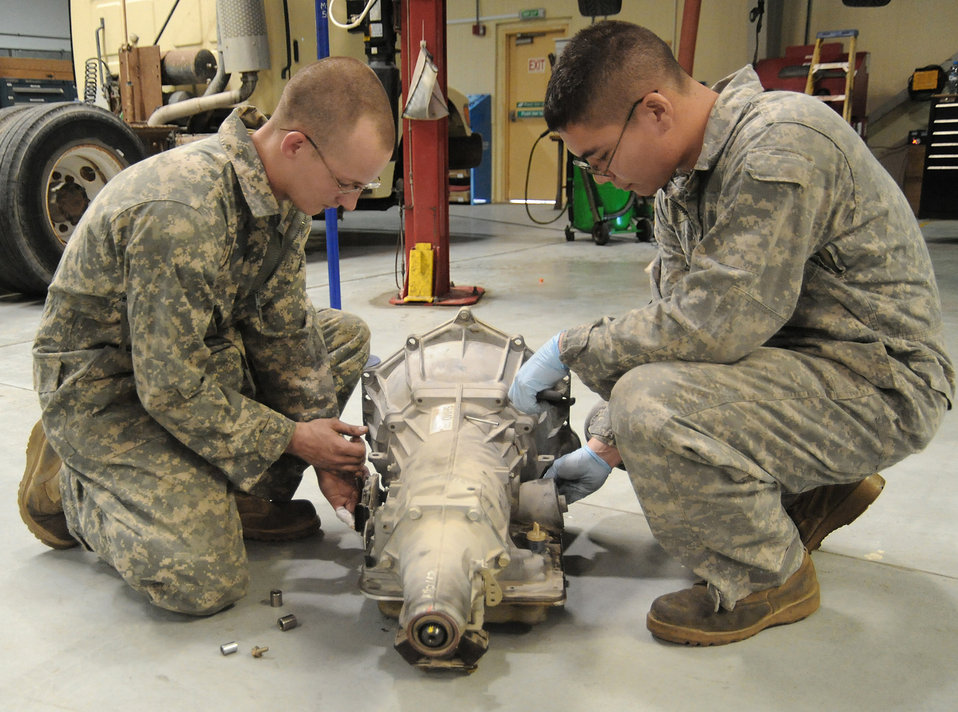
Let's get it started

Senior Airman Adam Owens and Senior Airman Michael Jakubec remove brackets and sensors from an old transmission to be used on a new transmission for a Pontiac GTO April 26 at an air base in Southwest Asia. The GTO is used as a chase car to help guide U-2 pilots during takeoffs and landings. Airman Owens is deployed from the 174th Air National Guard Base at Hancock Field, N.Y. Airman Jakubec is deployed from Kadena Air Base, Japan. Airmen Owens and Jakubec are 380th Expeditionary Logistics Readiness Squadron vehicle maintainers.